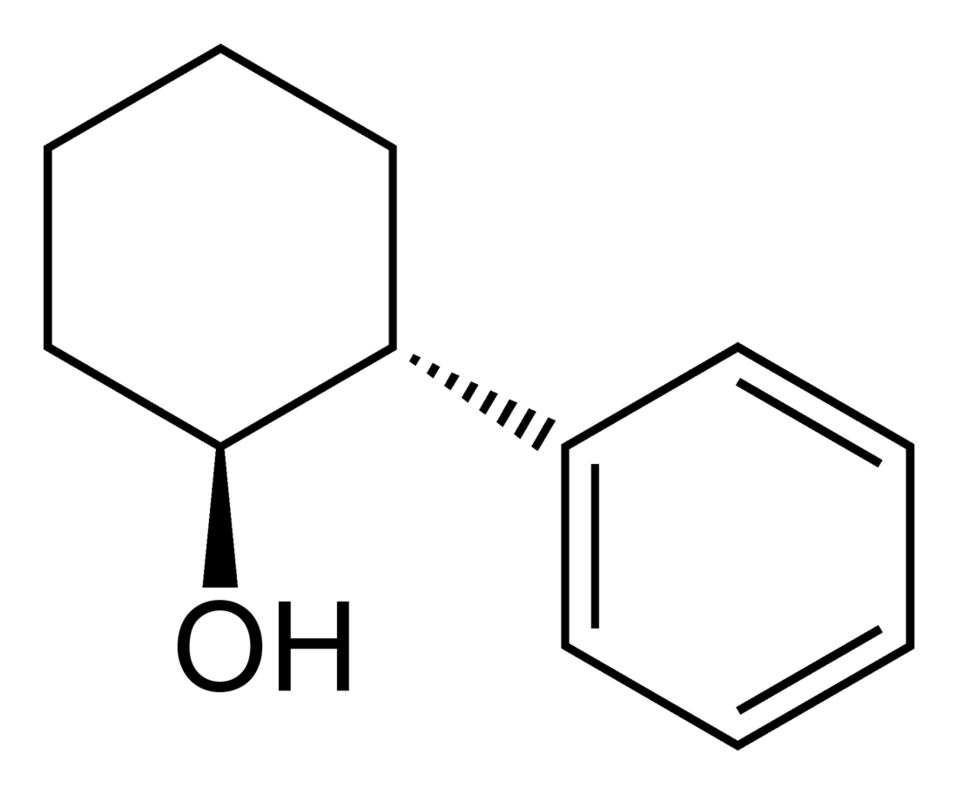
Skeletal formula of (1S,2R)-2-phenylcyclohexanol, C12H16O